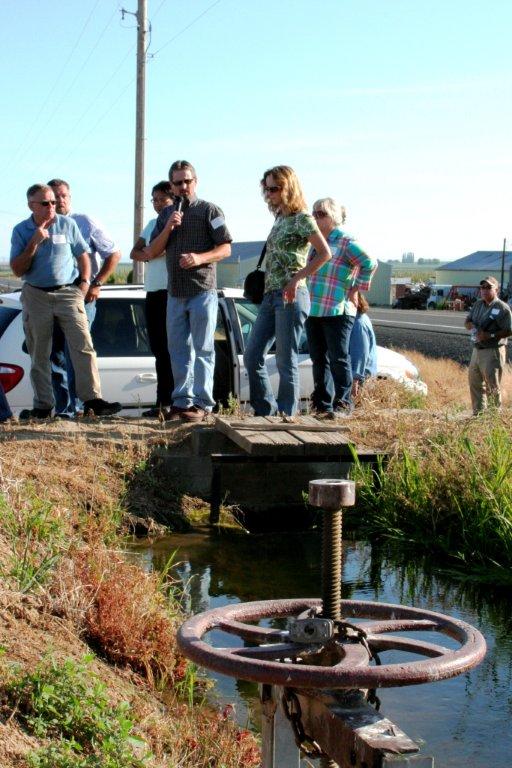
On the Road with Mike Taylor

FDA Deputy Commissioner Michael Taylor (left) and colleagues started a five-day tour of the Pacific Northwest on Sunday, Aug. 11, 2013 -- visiting Idaho, Oregon and Washington -- to get a first-hand look at produce production and irrigation operations, and to discuss the proposed Produce Safety Rule with growers, food industry representatives and state officials. Here Mike and colleagues are touring an irrigation canal. For more about Mike's multi-region tour, read these FDA Voice blog posts:

• Hearing the Concerns of Maine Growers Striving for Agricultural Diversity
• On the Road with Mike Taylor: Touring the Pacific Northwest
• On the Road with Mike Taylor, Day 2: Frank Talk in Farm Country
• On the Road with Mike Taylor, Day 3: Families and Partnerships
• On the Road with Mike Taylor, Day 4: Looking to the Future